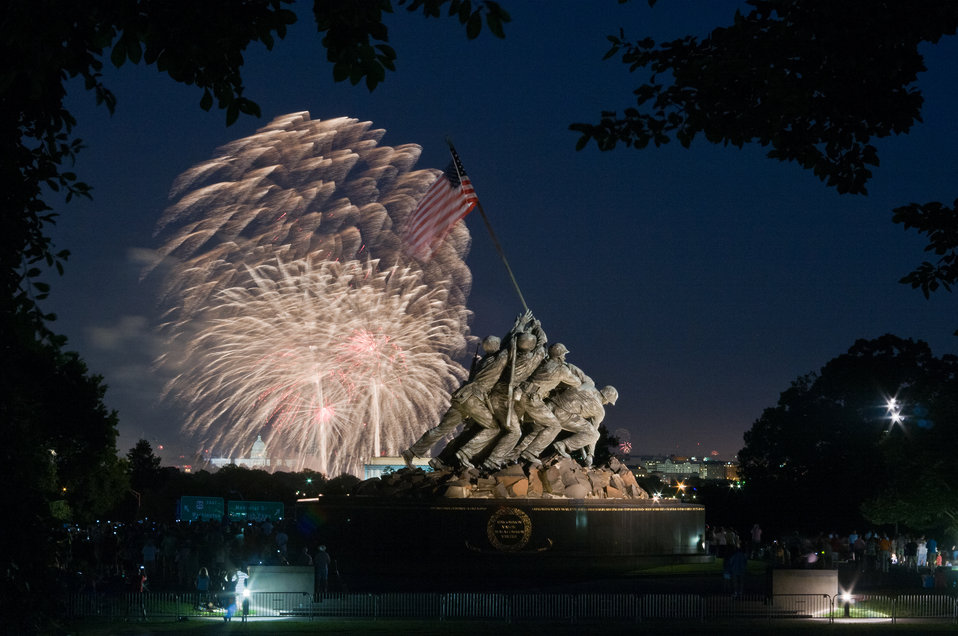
Independence Day celebration fireworks are seen from the Iwo Jima, U.S. Marine Corps Memorial in Arlington, VA on Jul. 4, 2013. In the distance are the Lincoln Memorial, the U.S. Department of Agriculture (USDA) Yates Building (dark red brick building), the Washington Monument (with scaffolding), and the U.S. Capitol building in Washington, D.C.